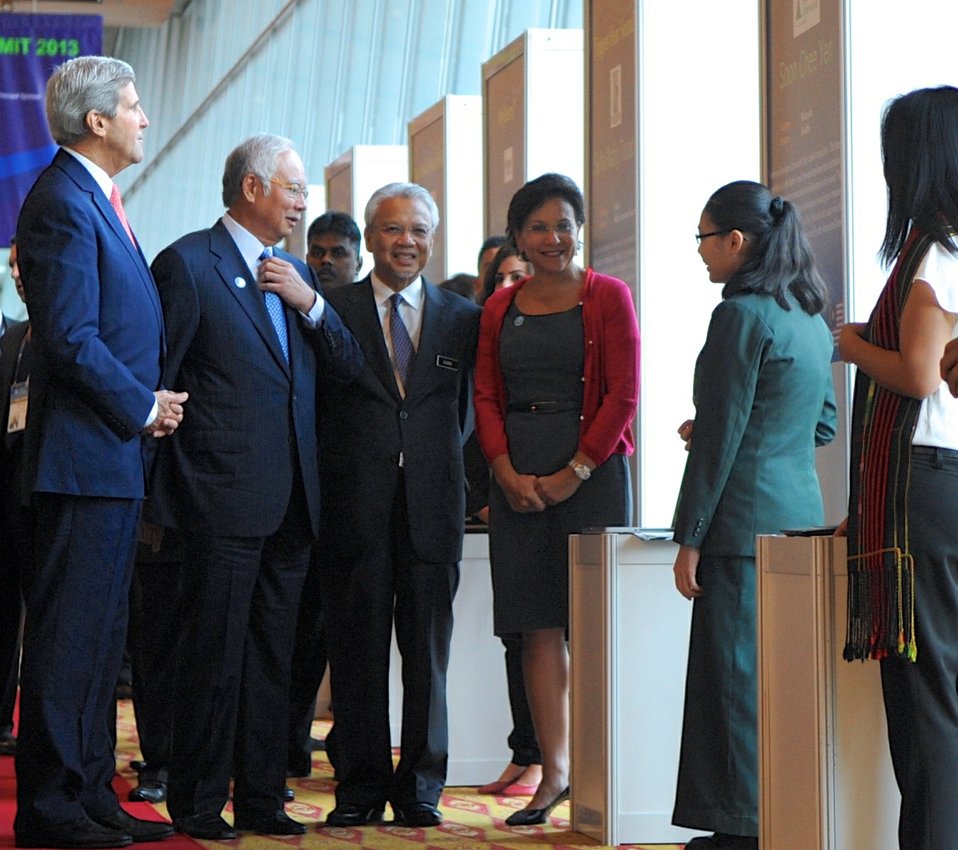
Secretary Kerry Observes Exhibits at Innovation Showcase

U.S. Secretary of State John Kerry, accompanied by Malaysian Prime Minister Najib Razak and U.S. Commerce Secretary Penny Pritzker, examines exhibits at the Innovation Showcase, held as part of the Global Entrepreneurship Summit in Kuala Lumpur on October 11, 2013.